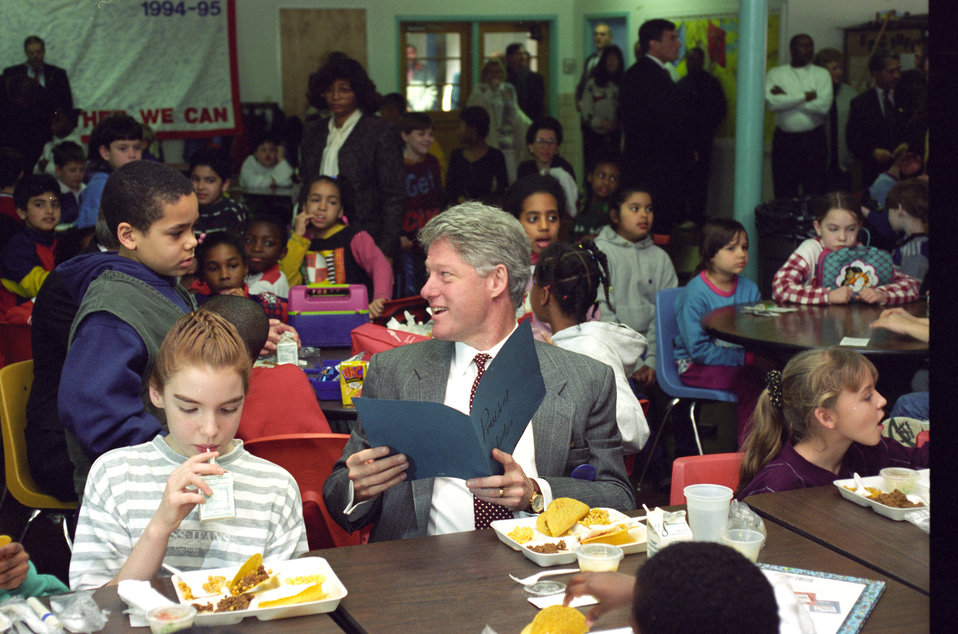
President Bill Clinton enjoys a school lunch at Patrick Henry Elementary School in Alexandria, VA on March 9, 1995. The National School Lunch Program (NSLP) is a federally assisted meal program operating in public and nonprofit private schools and residential childcare institutions through the U.S. Department of Agriculture’s (USDA) Food Nutrition Service (FNS). The program provides nutritionally balanced, low-cost or free lunches to children each school day. The program was established under the National School Lunch Act, signed by President Harry Truman in 1946.